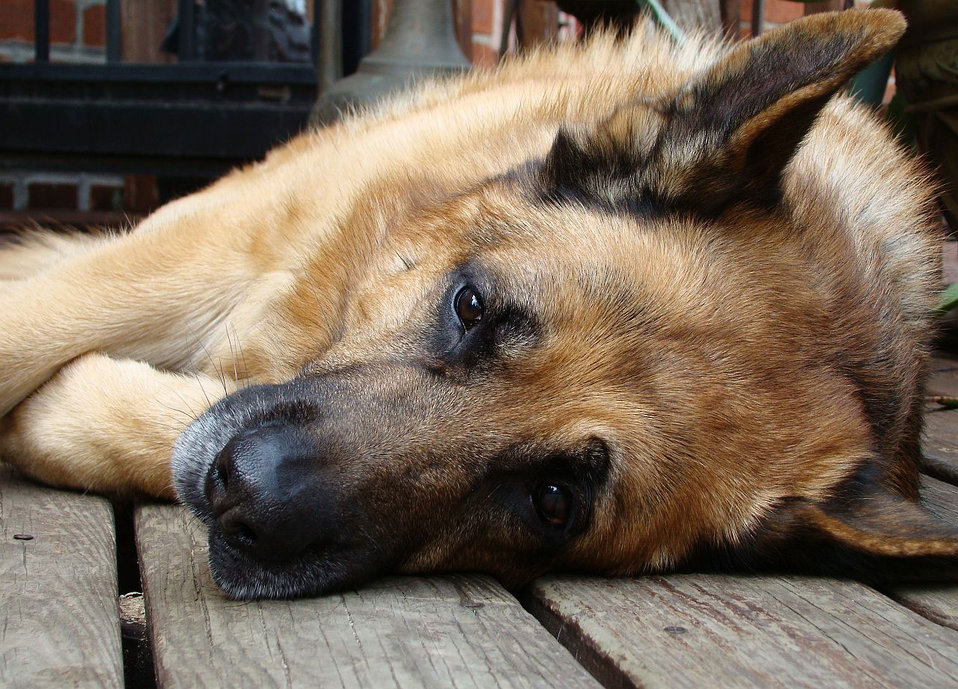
Tired

Time to take a rest.